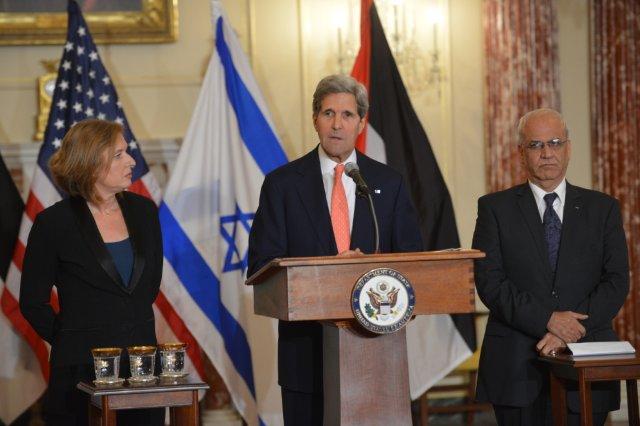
Secretary Kerry, Israeli Justice Minister Livni, and Palestinian Chief Negotiator Erekat Address Reporters

U.S. Secretary of State John Kerry, Israeli Justice Minister Tzipi Livni, and Palestinian Chief Negotiator Saeb Erekat address reporters on the Middle East Peace Process Talks at the U.S. Department of State in Washington, D.C., on July 30, 2013.